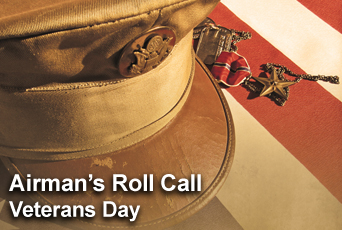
Airman's Roll Call highlights Veterans Day

This week's Airman's Roll Call focuses on Veterans Day and recognizing American veterans both past and present.